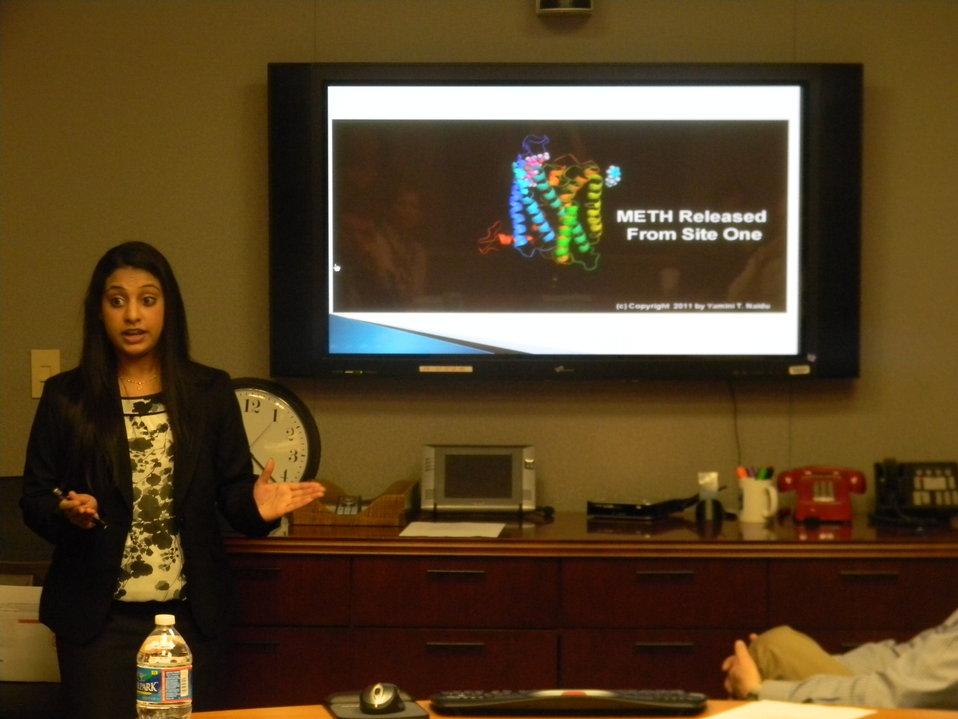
Yamini Naidu presents at NIDA

Yamini Naidu, 3rd place winner of the 2011 Addiction Science Awards, presents her study to NIDA staff